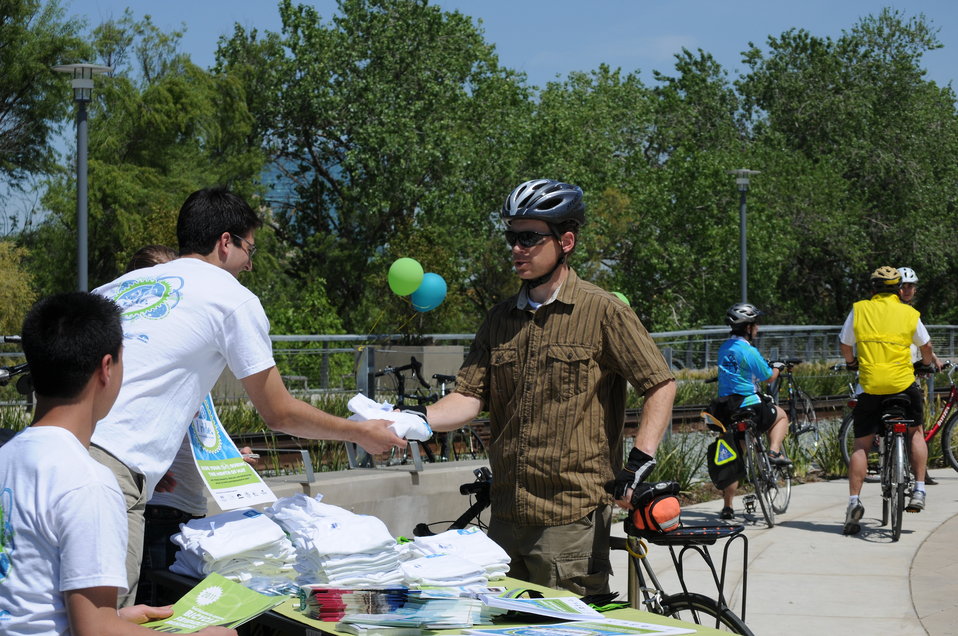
Sacramento District - 2011 bike friendly workplace

SACRAMENTO, Calif. -- U.S. Army Corps of Engineers Sacramento District regulatory project manager Zach Simmons receives his t-shirt for pledging and logging miles at a May is Bike Month kickoff event here May 2. Simmons pledged to bike 250 miles to help the district reach its current goal of nearly 5,000 miles in the month of May. The Sacramento Area Council of Governments recognized the Sacramento District as a 2011 bike-friendly workplace during the event.